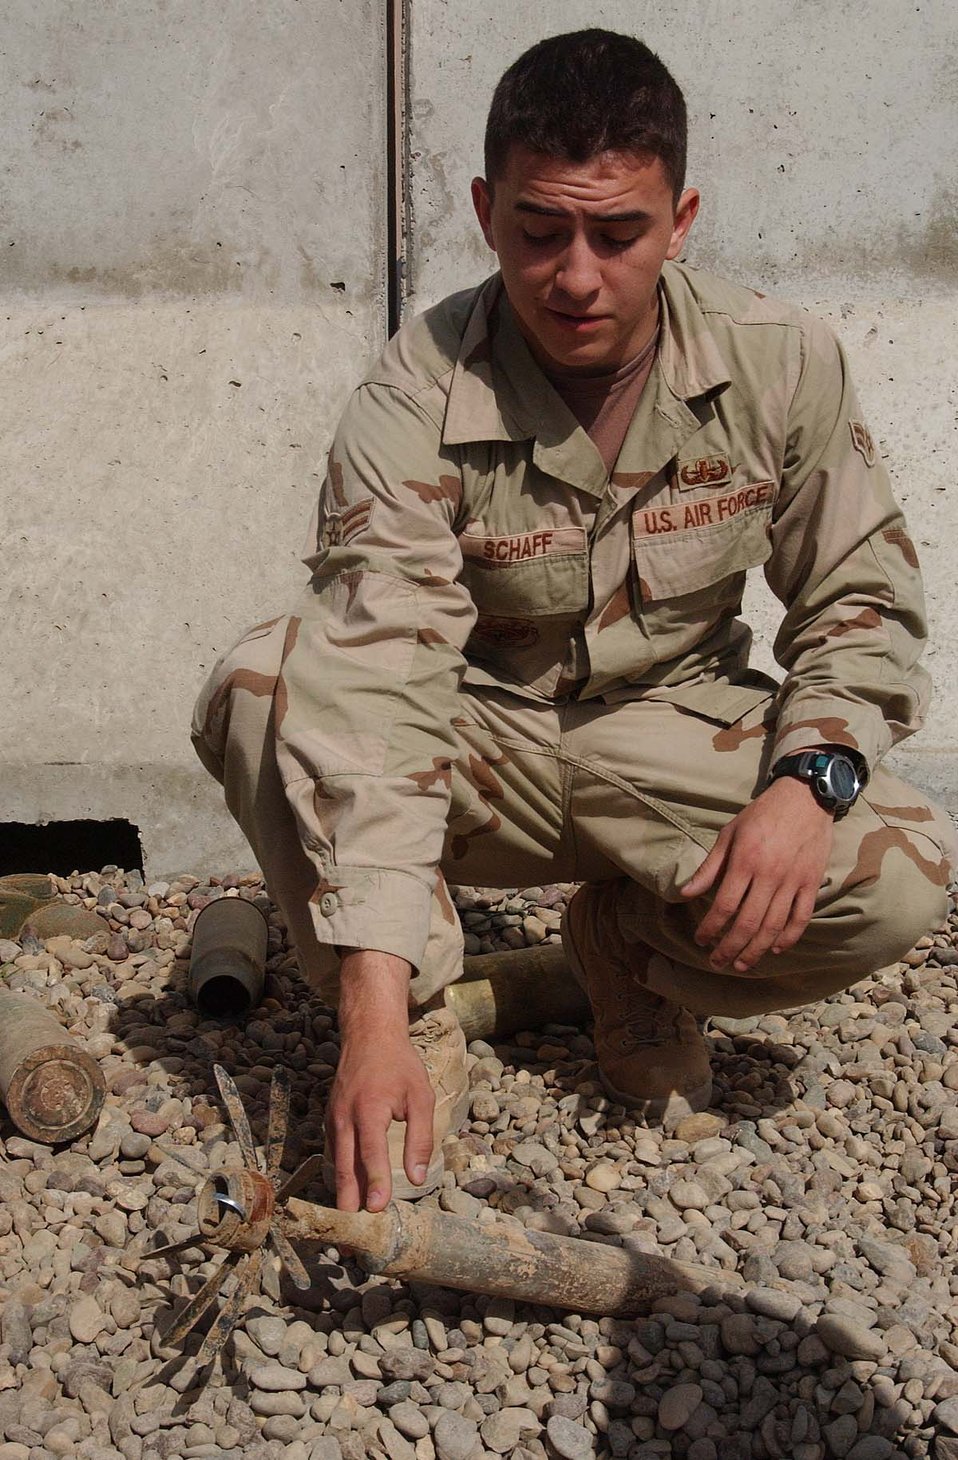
EOD protects people from explosive hazards

BALAD AIR BASE, Iraq -- Airman 1st Class Isaiah Schaff shows what common unexploded ordnance looks like. He is a 332nd Expeditionary Civil Engineer Squadron explosive ordnance disposal technician here.